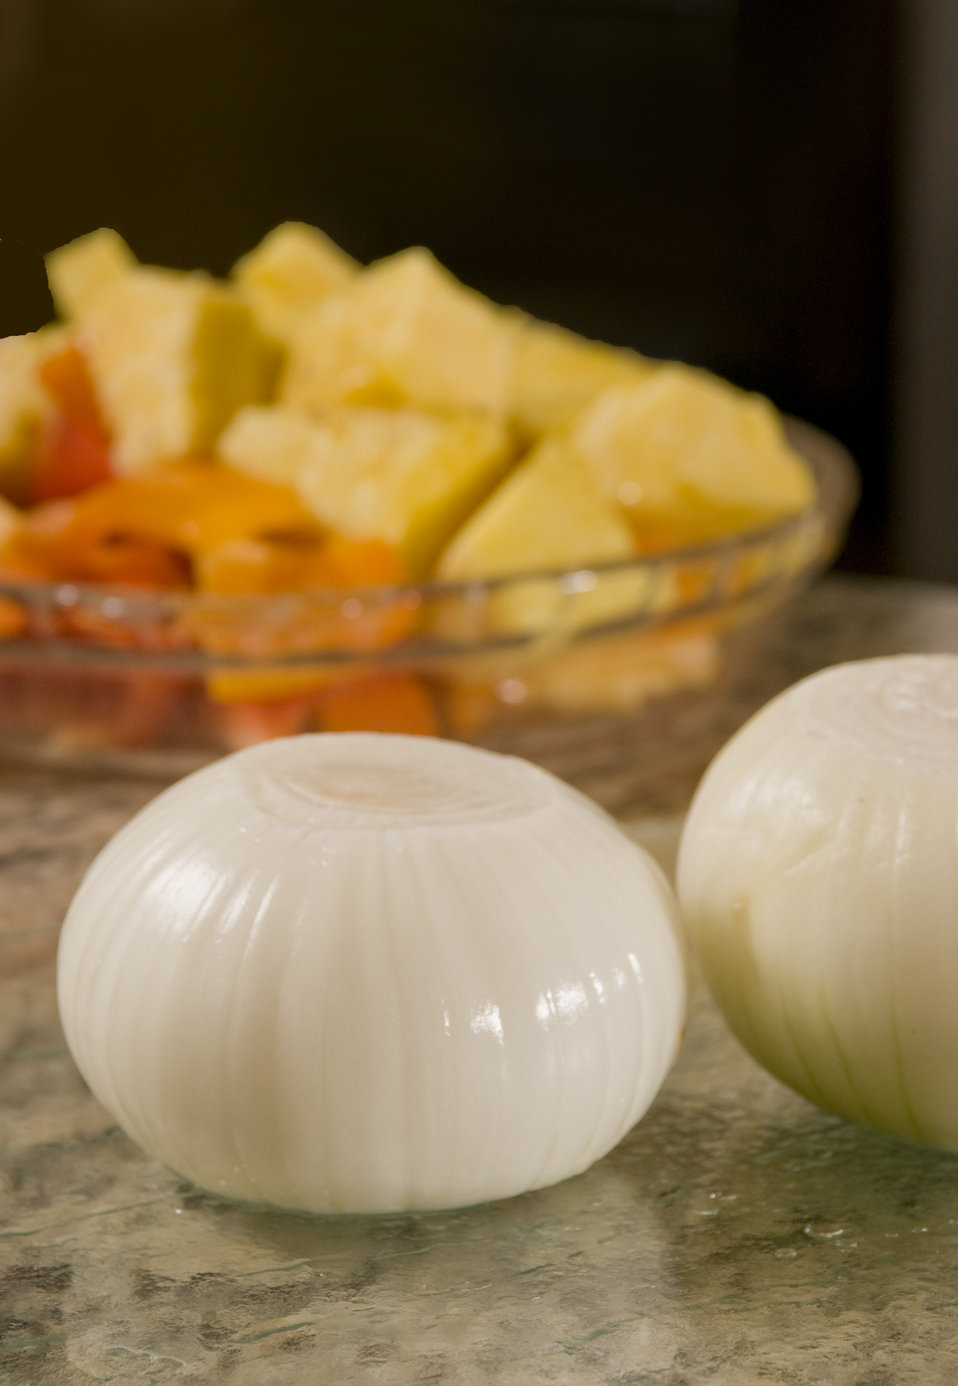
Onions and various fruit

This image depicts two freshly-prepared sweet onions in the foreground, while in the background, a dish of just-cut pineapple wedges and orange sections could be seen, all atop the sanitized surface of a kitchen countertop.